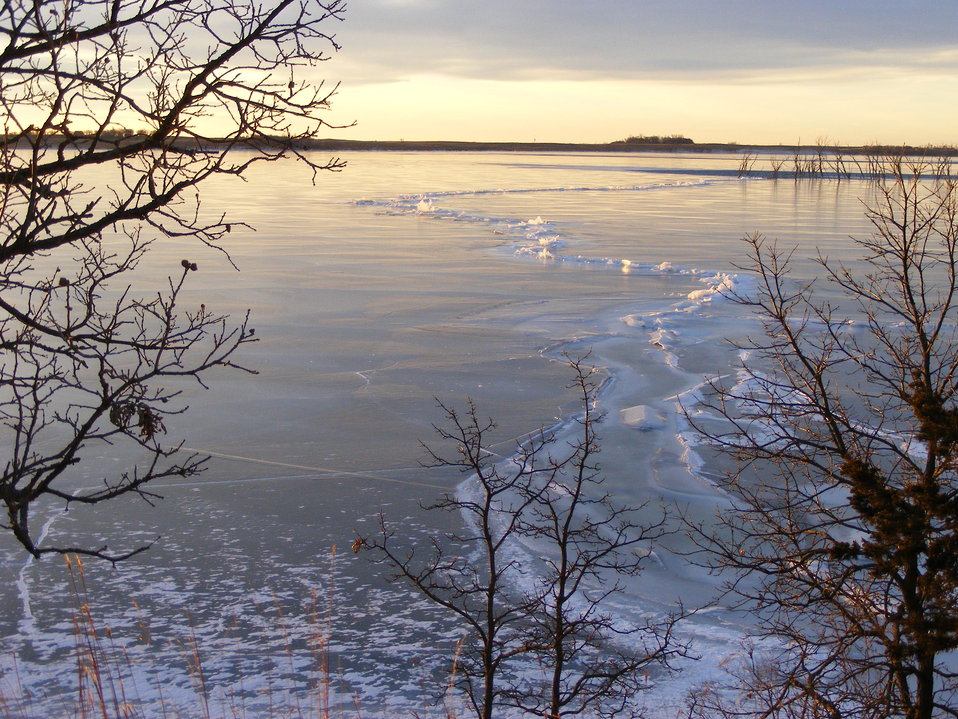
Ice Formations on Waubay Lake (Spring Lake)

High water levels in the 1990's caused Waubay Lake to swallow up the smaller Spring Lake at Waubay NWR. Ice can be up to three feet thick and last from November until April. Early in the winter it is common to hear the ice cracking and booming as it forms and expands.